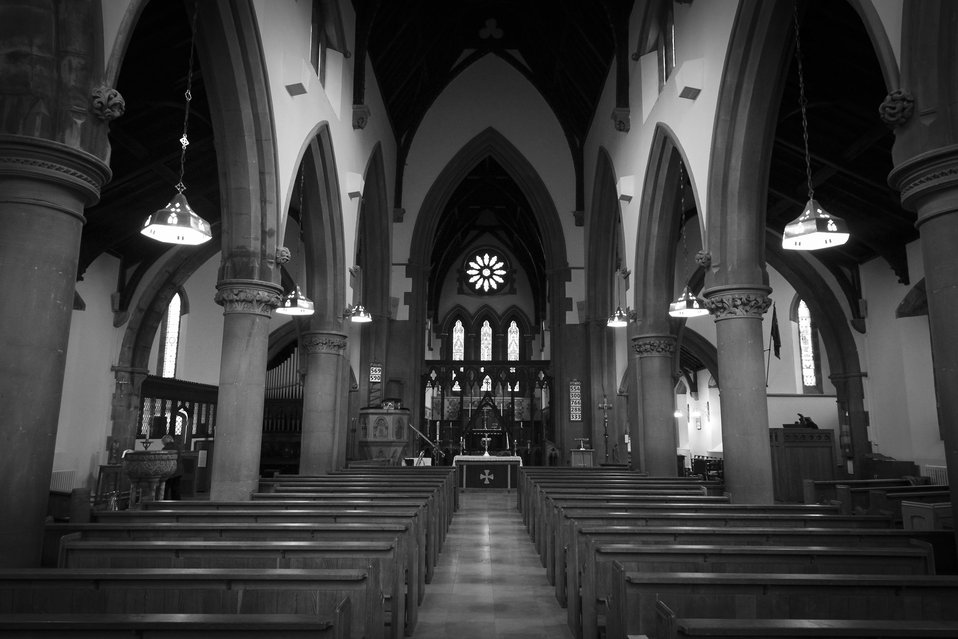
Aisle st mark's church, pensnett

An interior view of st mark's church, pensnett, dudley..